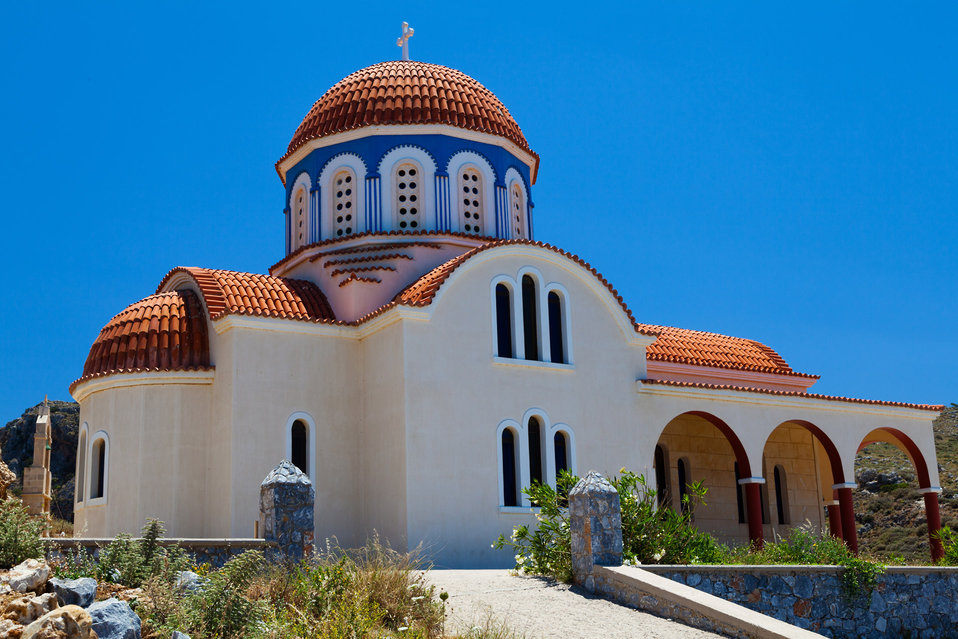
Orthodox church in crete.